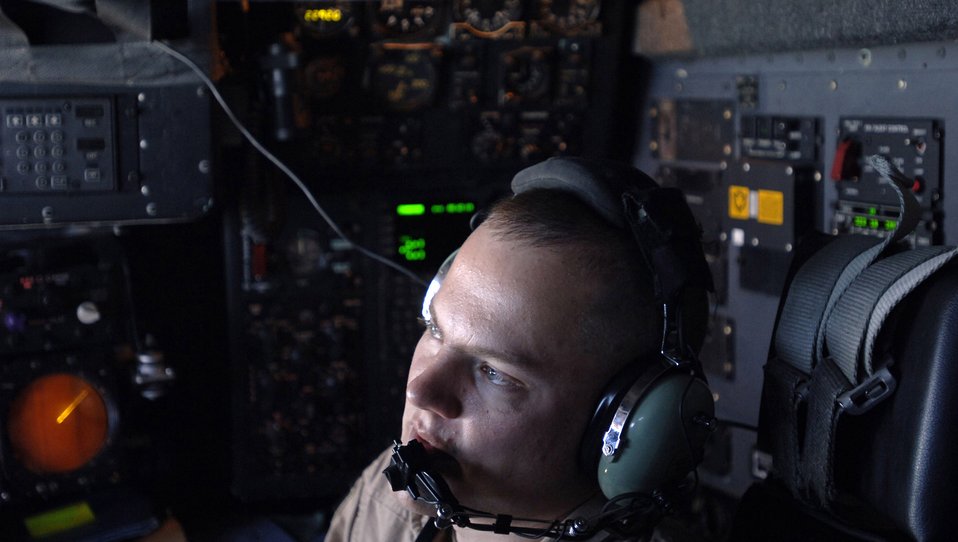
Leaflet airdrop mission delivers clear message to Taliban

Captain Tim Romin, a C-130 Hercules aircraft navigator, coordinates mission maneuvers with his crew March 6 before dropping 30,000 warning leaflets over the southeastern mountains of Afghanistan. The leaflet airdrop mission is contributing to Operation Achilles launched by International Security Assistance Force to help improve security and the Afghan people's quality of life.